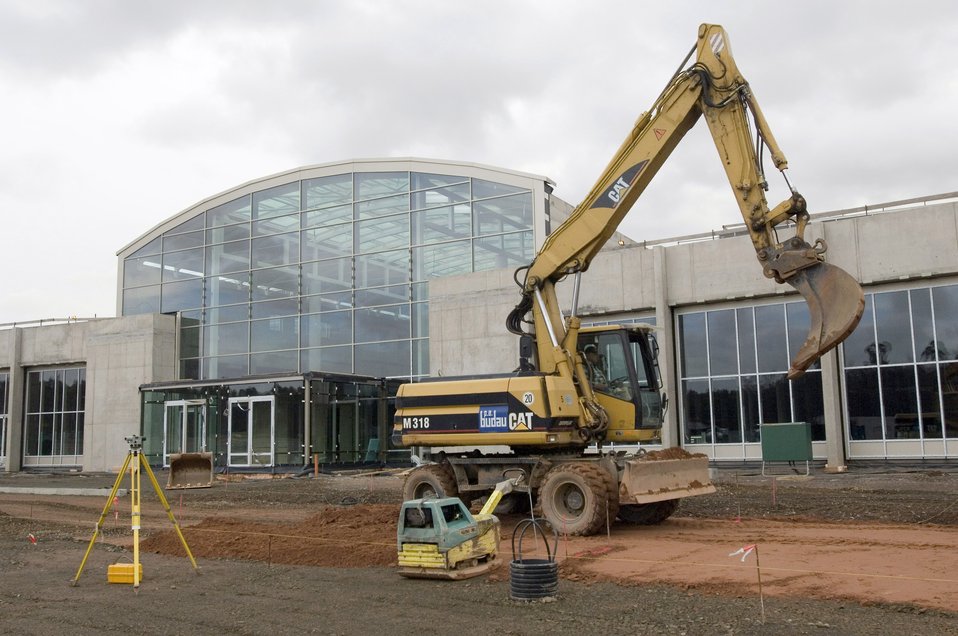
Transformation at Ramstein

Construction continues in front of the west entrance to the Kaiserslautern Military Community Center's at Ramstein Air Base, Germany, on Tuesday, March 28, 2006. The 840,000-square-foot facility will include an eight-story, 350-room hotel slated to open in September and the shopping mall in early 2007.